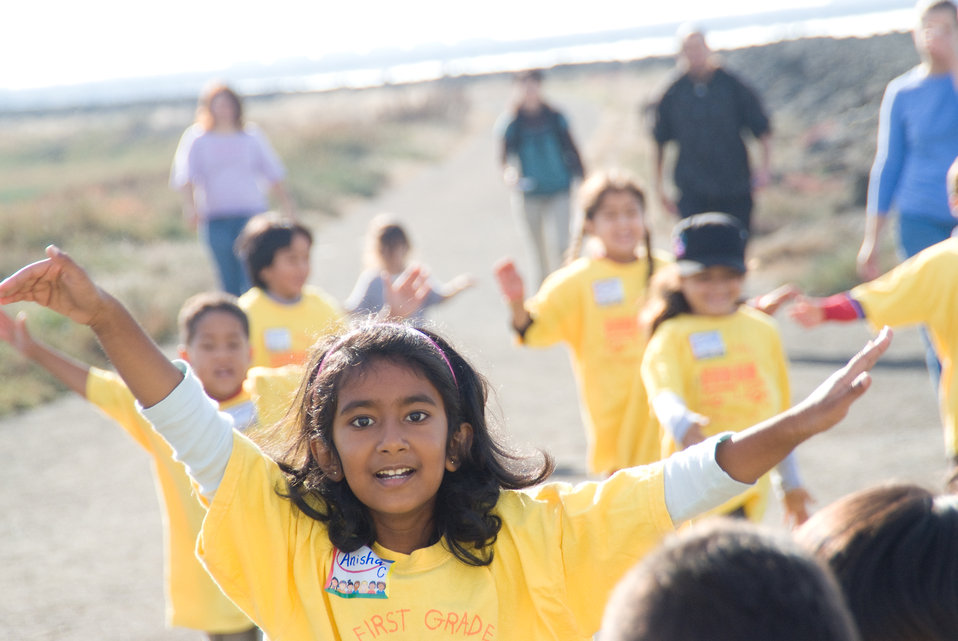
School field trip to Don Edwards SFBay NWR

Don Edwards San Francisco Bay National Wildlife Refuge Elementary School Field Trip.